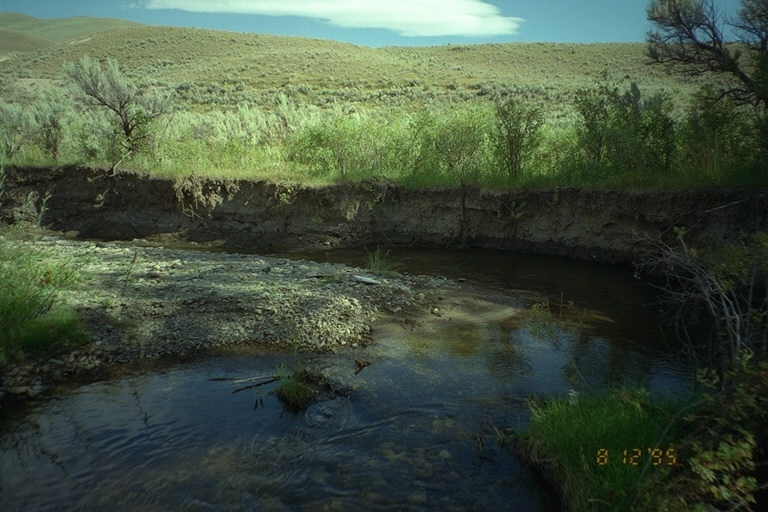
Riparian area Public Lands Salmon Field Office UCSC Upper Columbia Salmon Clearwater District